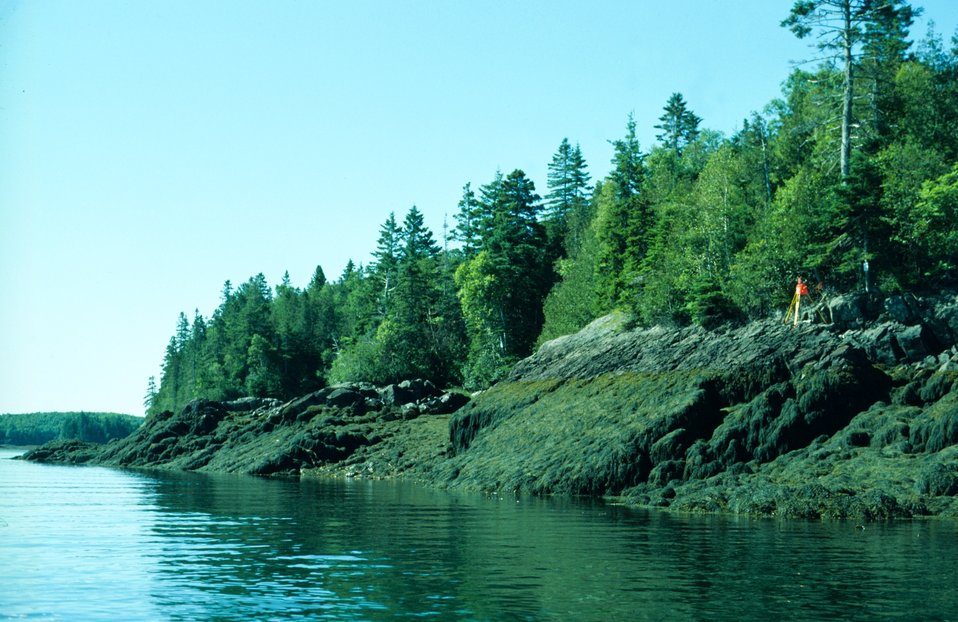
Low tide on Passamaquoddy Bay.